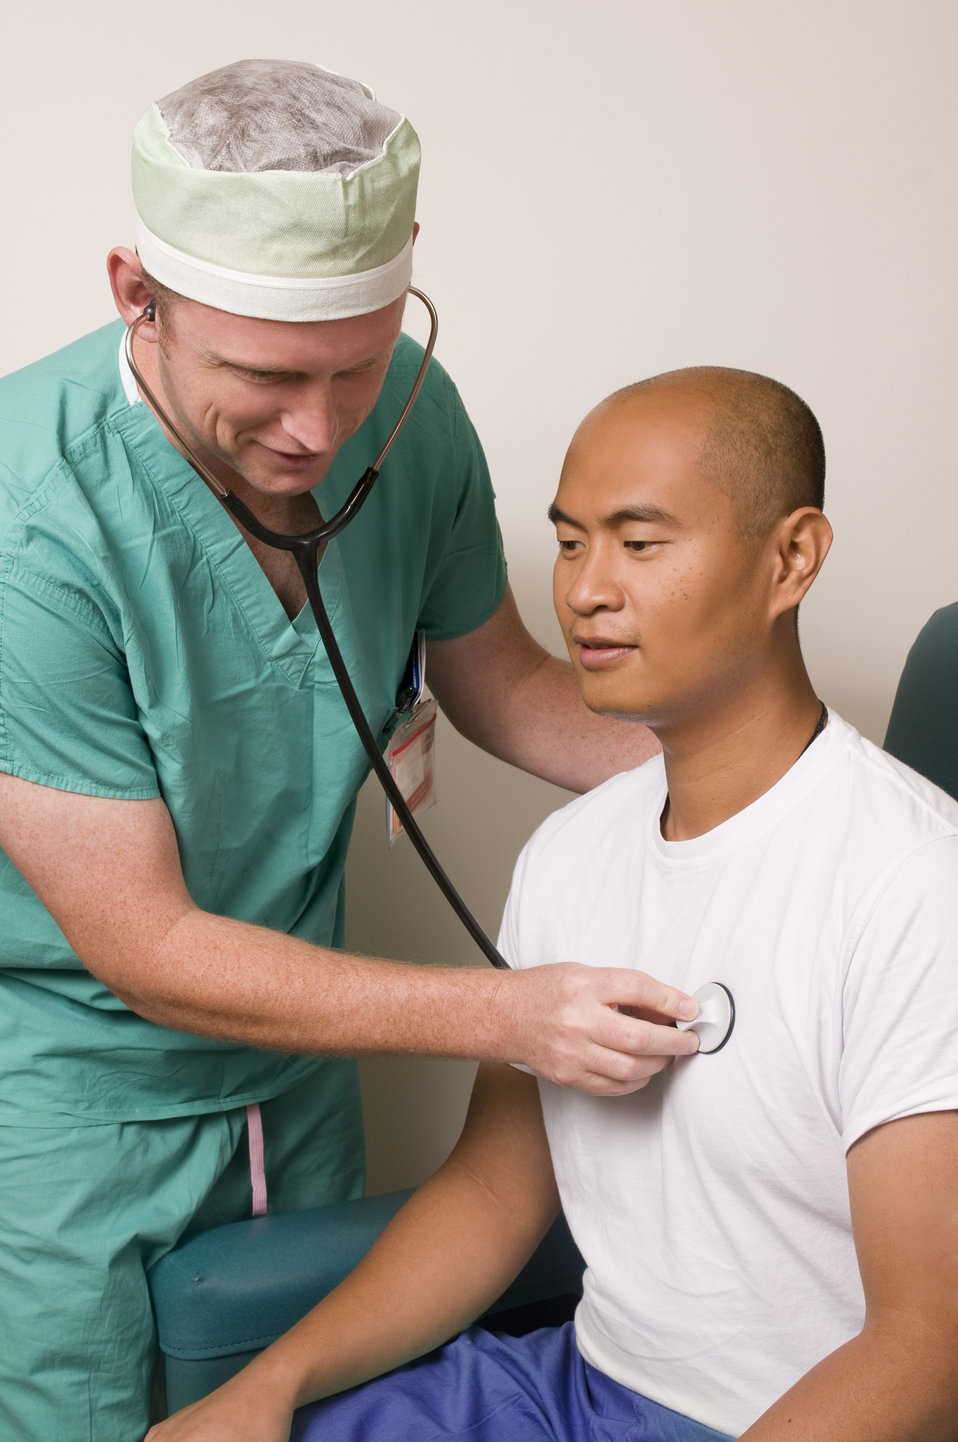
This image depicts a male clinician dressed in scrubs using a stethoscope he'd placed upon the upper left anterior chest of a seated male patient, in order to perform a thoracic auscultation.